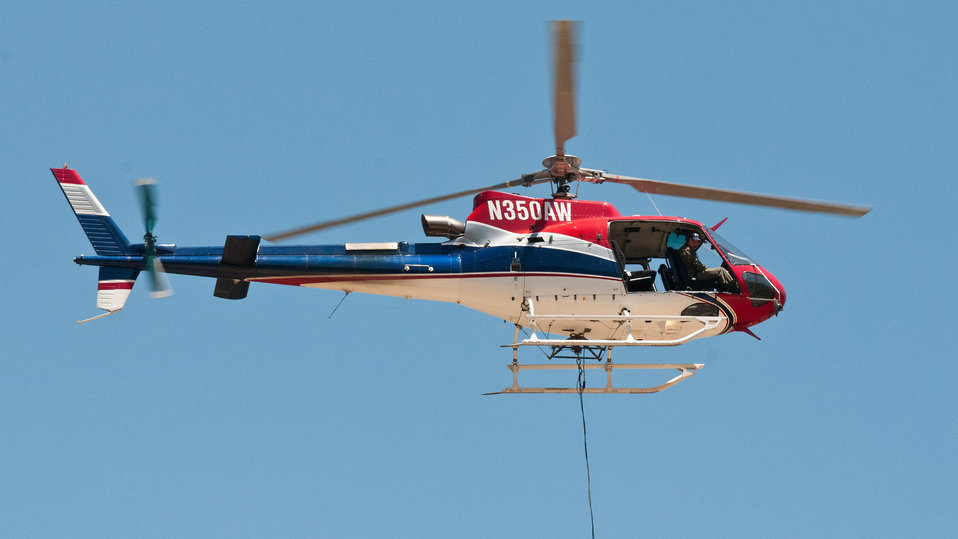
Mountain Air Chief Pilot Tim Booth hovers over a 4-man load crew who are attaching a cargo net with 1,400 pounds of straw to a remotely controlled release system, on Friday, July 20, 2012, at Seaman Reservoir, near Fort Collins, Colo., during the continuing aerial application of straw to mitigate soil and ash runoff from the mountainous terrain leading to Seaman Reservoir, drinking water resource for the City of Greeley. The A-Star Model B (3-blade rotor) aircraft will dangle a 100-foot cable over a load crew at the reservoir spillway. He will then lift an approximately 1,400 pound load of certified straw for aerial dispersal onto barren, burned out tributary lands surrounding the reservoir. Forest service lands received straw, while private and other lands receive a seed mix and straw to promote ground cover plant growth on ash-covered lands. In total, 1,800 tons of straw will be applied during the 14-day operation. One quarter of the cost was paid by the City of Greeley and the U.S. Department of Agriculture funded the remainder. The Hewlett Gulch Fire was started by a camper’s alcohol stove, on May 14, at the saddle of a picturesque mountain ridge along the Hewlett Gulch Trail of Poudre Canyon, in the Roosevelt National Forest, 60 miles north of Denver. At it’s more than 400 firefighters were battling fires being pushed by 50 mph winds that helped blacken over 12-square-miles of dry ground cover, brush and trees. Many of the trees were already dead and tinder dry from beetle-kill. The water in the reservoir remains clean and clear, while downstream water flow has gone from famous Colorado clear water to nearly black flows of water heavily laden with ash, silt, and burnt debris that recent thunderstorms have already washed down from the mountainsides.